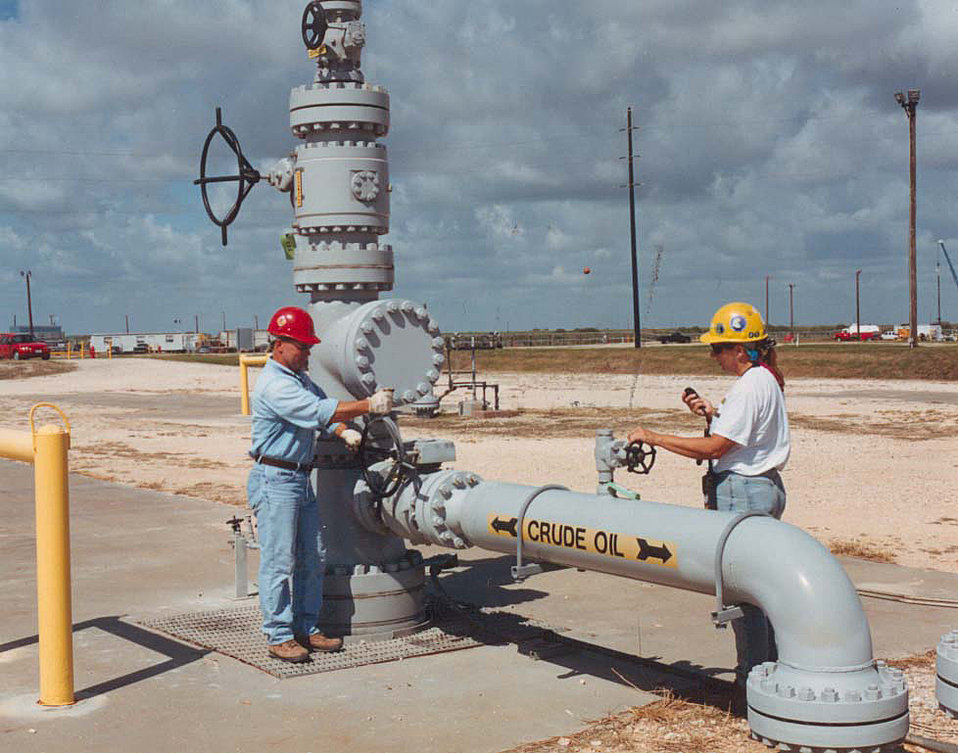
2005 Baldrige Award Winner, DynMcDermott Petroleum Operations